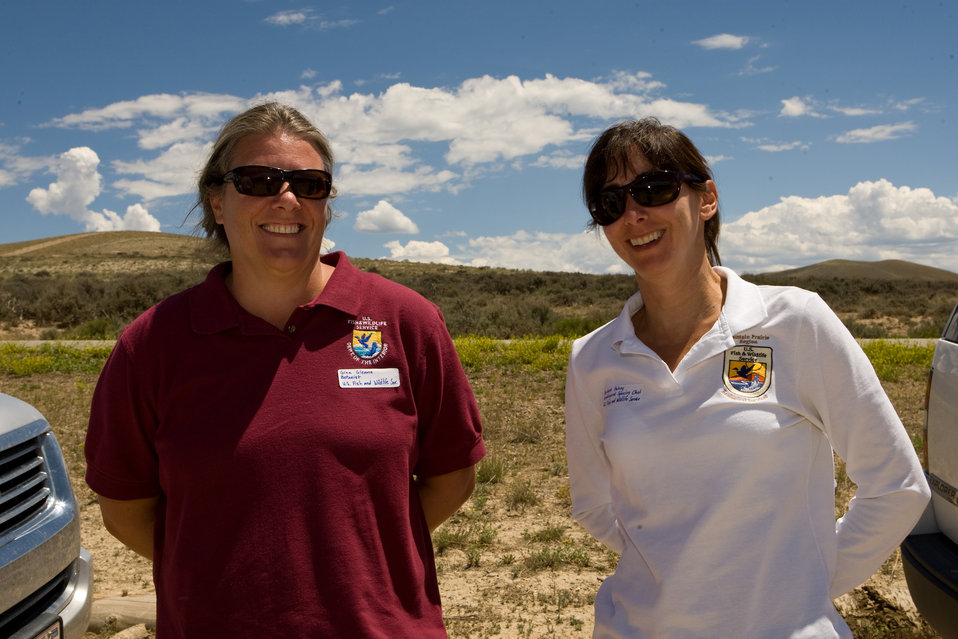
Colorado Rare Plant Conservation Initiative

The Colorado Rare Plant Conservation Initiative (RPCI) is a partnership of 23 statewide and regional agencies, private organizations, and academic institutions working to conserve 121 rare plants in Colorado. As part of these efforts the group developed the Colorado Rare Plant Conservation Strategy, developed Best Management Practices to reduce energy development impacts, addressed climate change, and developed focused strategies for the conservation of individual species at eight priority landscapes. The group has also worked to coordinate volunteer efforts for plant conservation across the state.